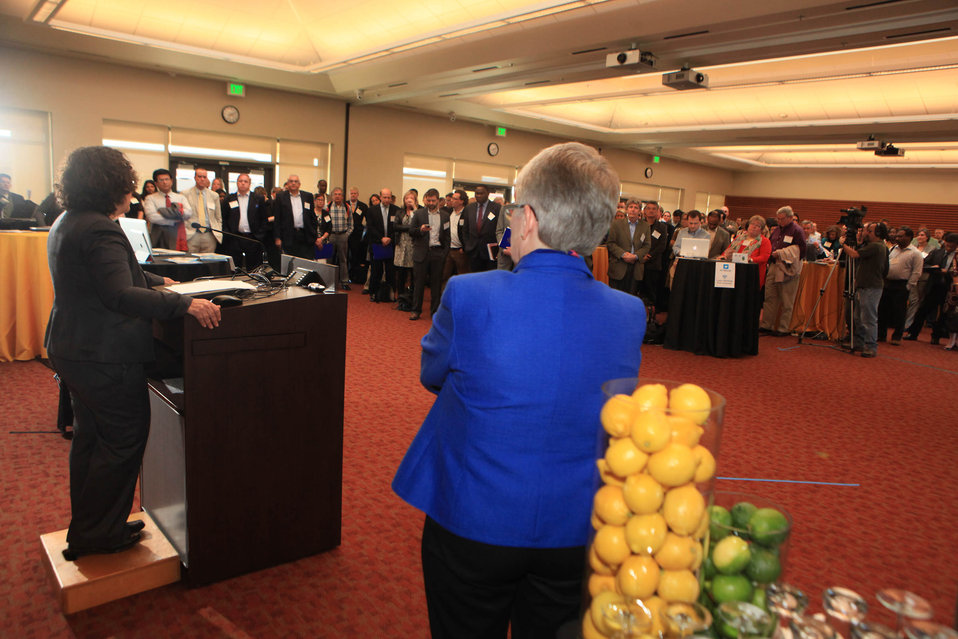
Nancy Sutley Speaks to the Audience

Nancy Sutley, the Chair of the White House Council on Environmental Quality, speaks to the audience during the Introductory session of the USRIO 2.0 conference at the Oberndorf Event Center of the Stanford Graduate School of Business Knight Center in Stanford, California, on February 2, 2012.